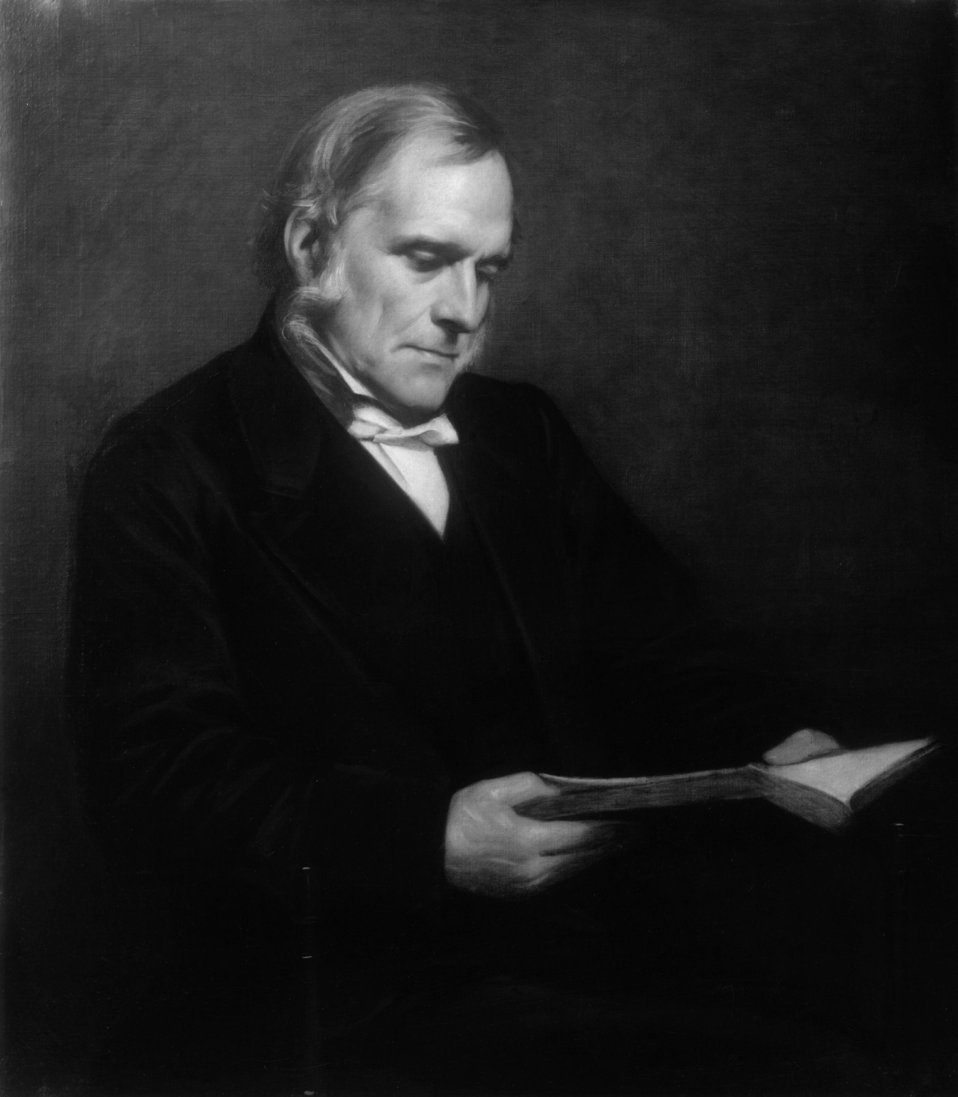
(John) Frederick Denison Maurice by Samuel Laurence